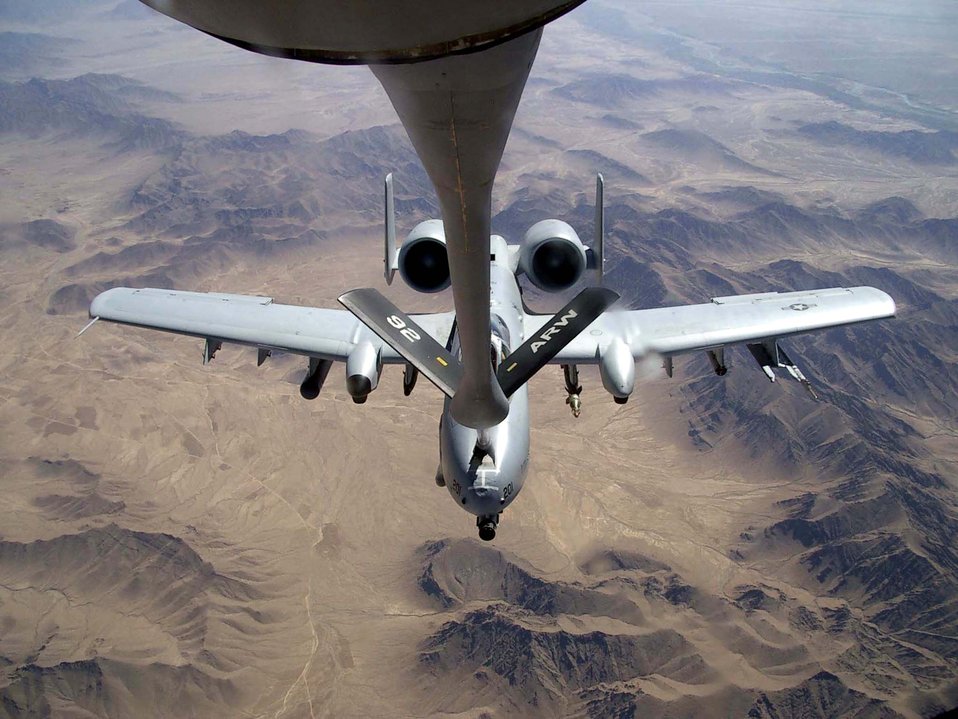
Bagram A-10s surge for summer offensives

060627-F-0916M-035
An A-10 Thunderbolt II from the 81st Expeditionary Fighter Squadron at Bagram Air Base, Afghanistan, takes on gas from a KC-135 Stratotanker from the 22nd Expeditionary Air Refueling Squadron. The 22nd EARS is based at Manas Air Base, Kyrgyzstan. This A-10 is deployed from the Air Force Reserve Command's 442nd Fighter Wing at Whiteman Air Force Base, Mo.